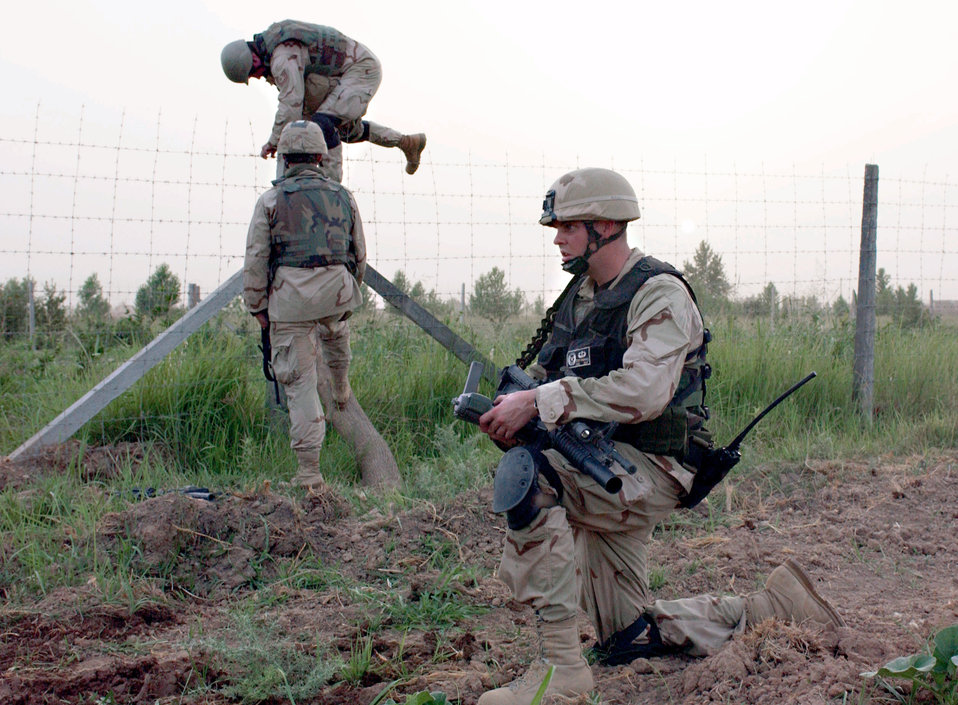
Scouting about

IRAQ -- Soldiers and Airmen climb over a fence during a weapons interdiction mission here May 31. They are part of a joint team which must scout the area before a coalition attack to help ensure no collateral damage will occur.